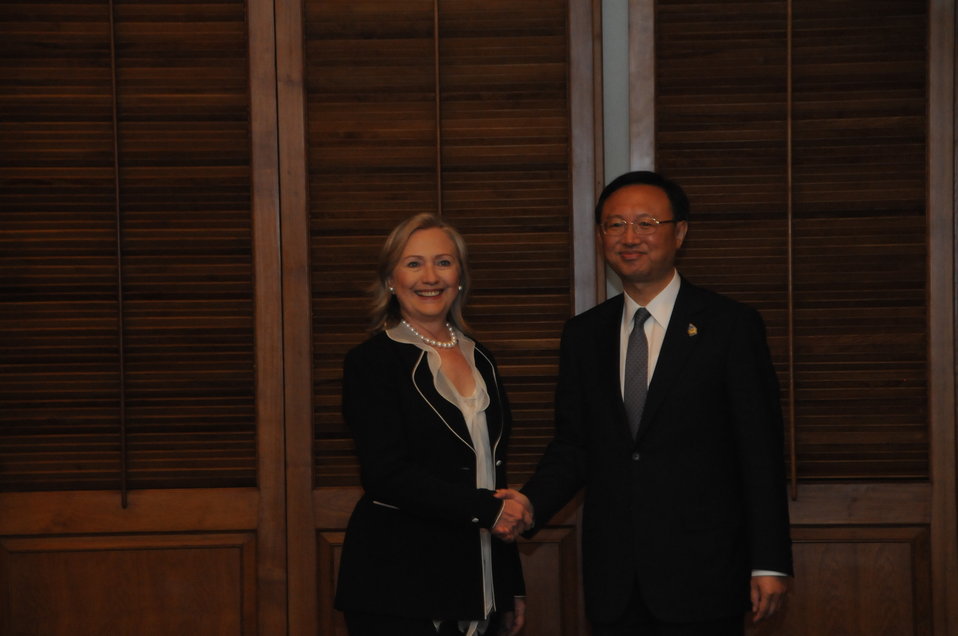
Secretary Clinton Shakes Hands With Chinese Foreign Minister Yang Jiechi

U.S. Secretary of State Hillary Rodham Clinton shakes hands with Chinese Foreign Minister Yang Jiechi in Bali, Indonesia, on July 22, 2011.